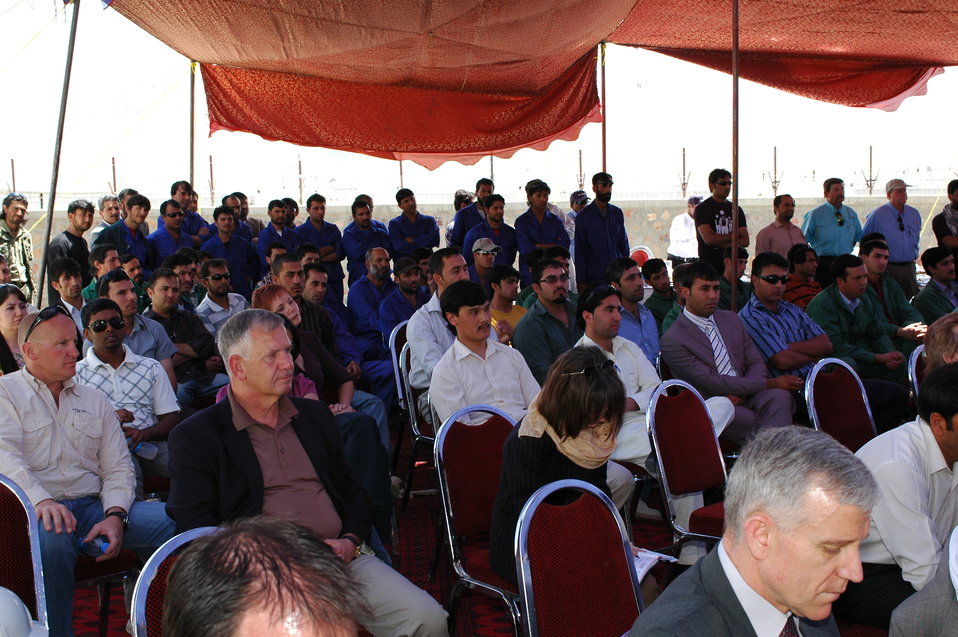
105 MW Tarakhil Power Plant Handover